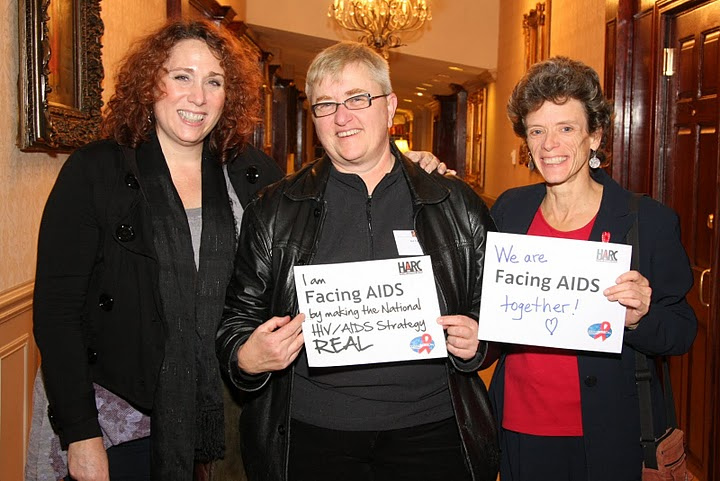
We are Facing AIDS through NHAS-9